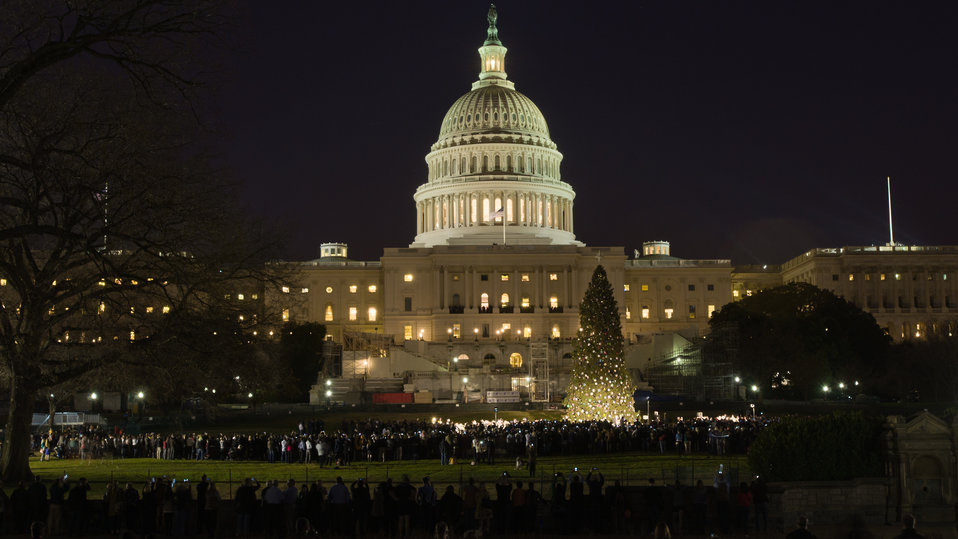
The lights of the 2012 U.S. Capitol Christmas Tree from the Blanco Ranger District of the White River National Forest near Meeker, Colorado; and decorated with hand-made ornaments, was switched on by Colorado Springs high school student Ryan Shuster and House Speaker John Boehner, on Tuesday, Dec. 4, 2012. Since November, the tree visited dozens of cities across the country as it made its way here on Nov.26, 2012. The 73-foot Englemann spruce traveled from the White River National Forest in Colorado. Other representatives as well as Natural Resources and Environment Under Secretary Harris Sherman spoke during the festivities.